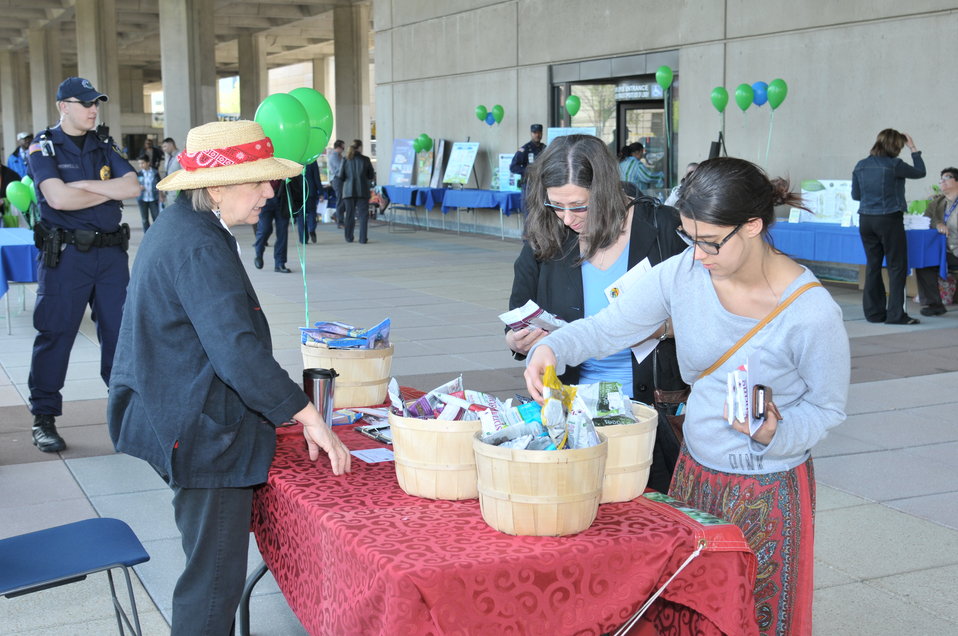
U.S Postal Services introduces a new Global: Sea Surface temperatures forever stamp at the Earth Day program at Department of Energy on April 22, 2014. ( DOE Deputy D.Poneman,T.Day, C.Williams, C.Anderson II, J.Colin Ph.D, Dr. K. Sullivan, K.Tobin Ph.D, W. Gicher Jr)